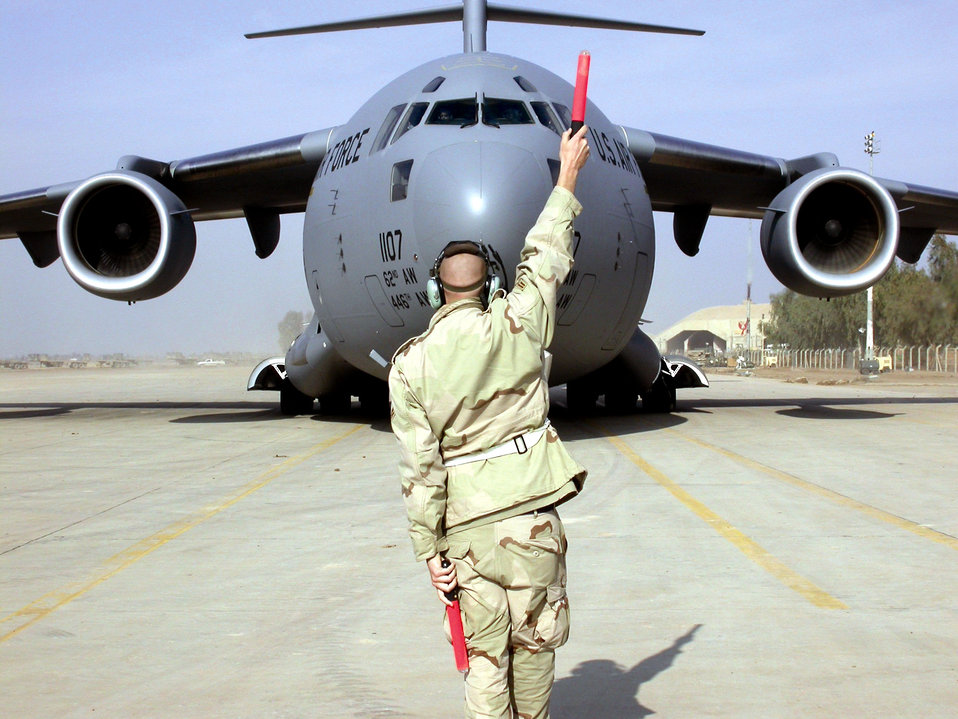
C-17 parking this way

BALAD AIR BASE, Iraq -- Airman 1st Class James Amelung marshals a C-17 Globemaster III from McChord Air Force Base, Wash., to its parking spot here. As many as 30 cargo aircraft arrive here each day. Amelung is assigned to the 332nd Air Expeditionary Aircraft Maintenance Squadron.